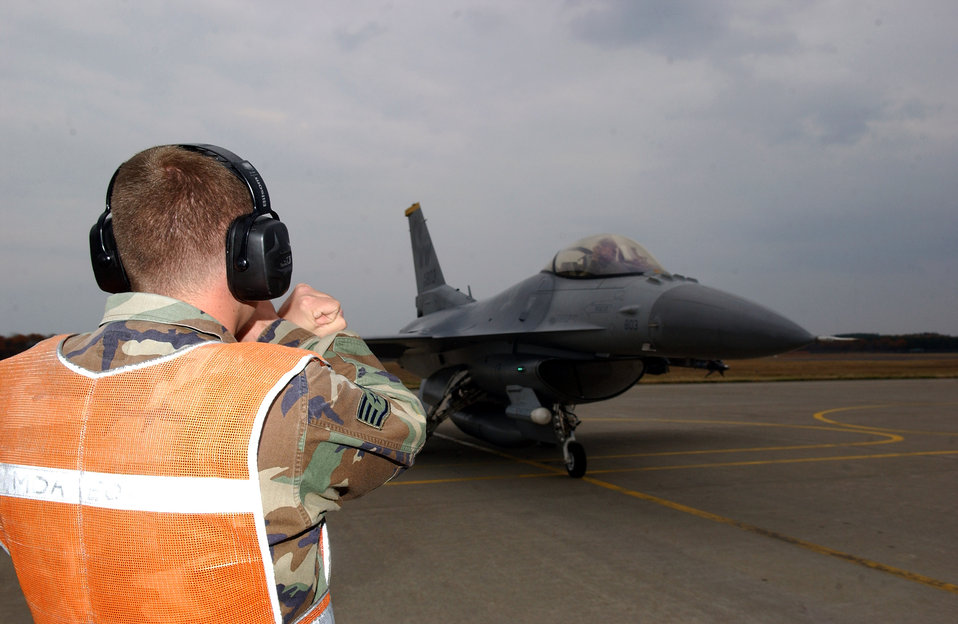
Pilots focus on air superiority, operations during Keen Sword

Staff Sgt. John Swearingen marshalls Capt. Jonathan Wentzel in his F-16 Fighting Falcon for a final inspection prior to take off during exercise Keen Sword Nov. 14 at Misawa Air Base, Japan. Sergeant Swearingen is with the 35th Aircraft Maintenance Squadron and Captain Wentzel is with the 35th Operations Support Squadron.